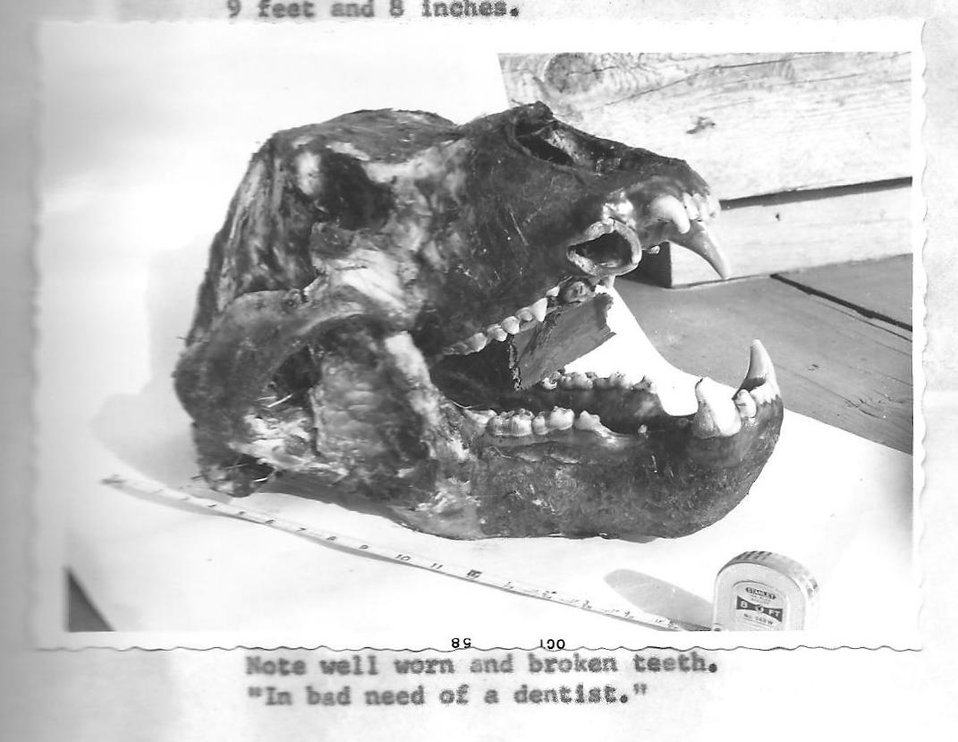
(1958) In Bad Need of a Dentist

Credit: USFWS

Source and Contact: Kodiak National Wildlife Refuge